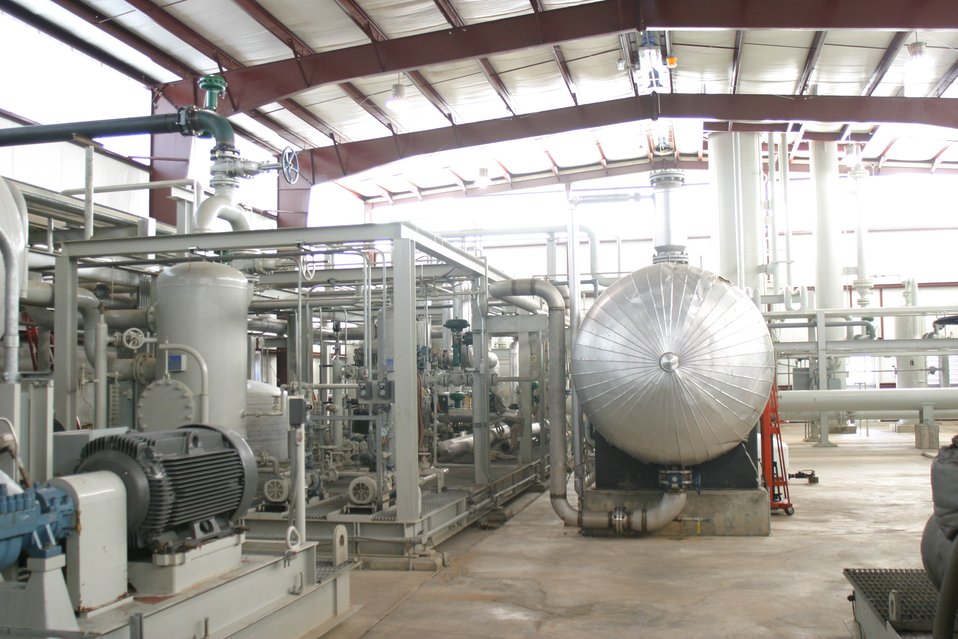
Enhanced oil recovery facility located in Gaylord, Michigan.
This facility includes separation and compression units for use in recovery and storage of CO2.